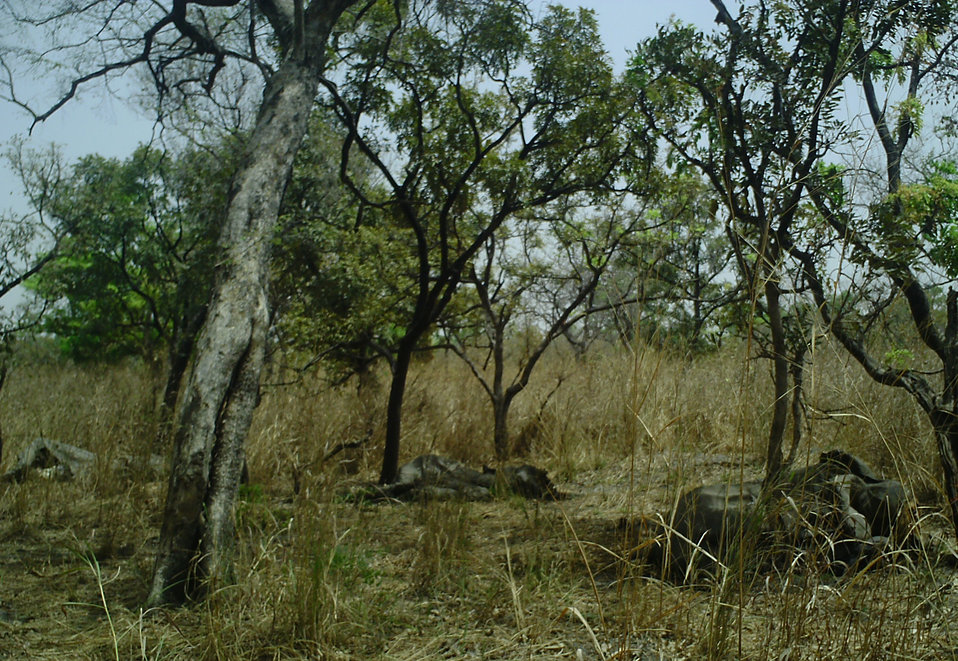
Bouba Ndjida National Park in Cameroon, location of elephant slaughter. Bodies of three poached elephants.